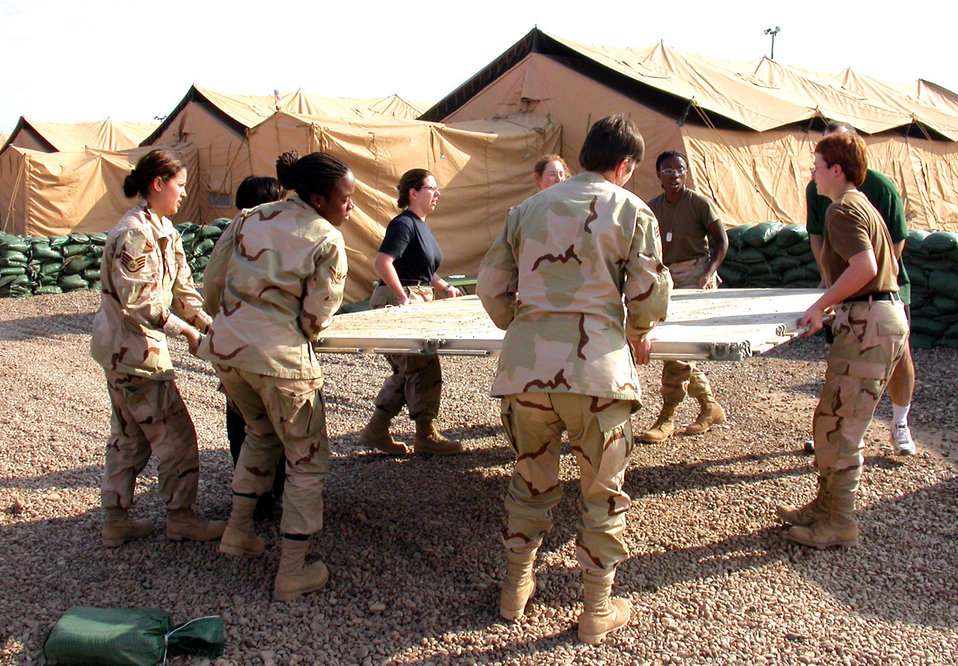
We build this city

BALAD AIR BASE, Iraq -- Airmen move a pallet out of the way after helping put sandbags around a tent. Everyone deployed here pitches in to help build the tent city. More than 70 tents have been erected since airmen arrived in early November.